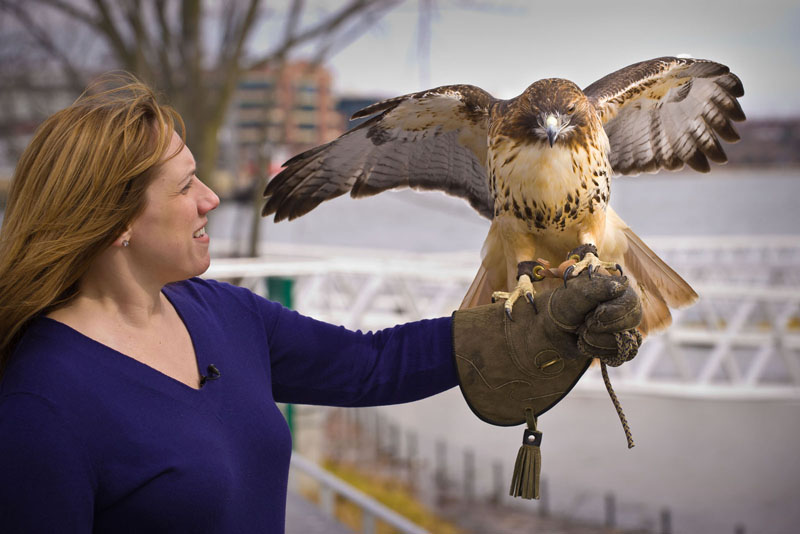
Dale Perry, EPA Science Advisor, Diamond Teague Park, Potomac Ave SE Washington, DC 2011 USEPA photo by Eric Vance